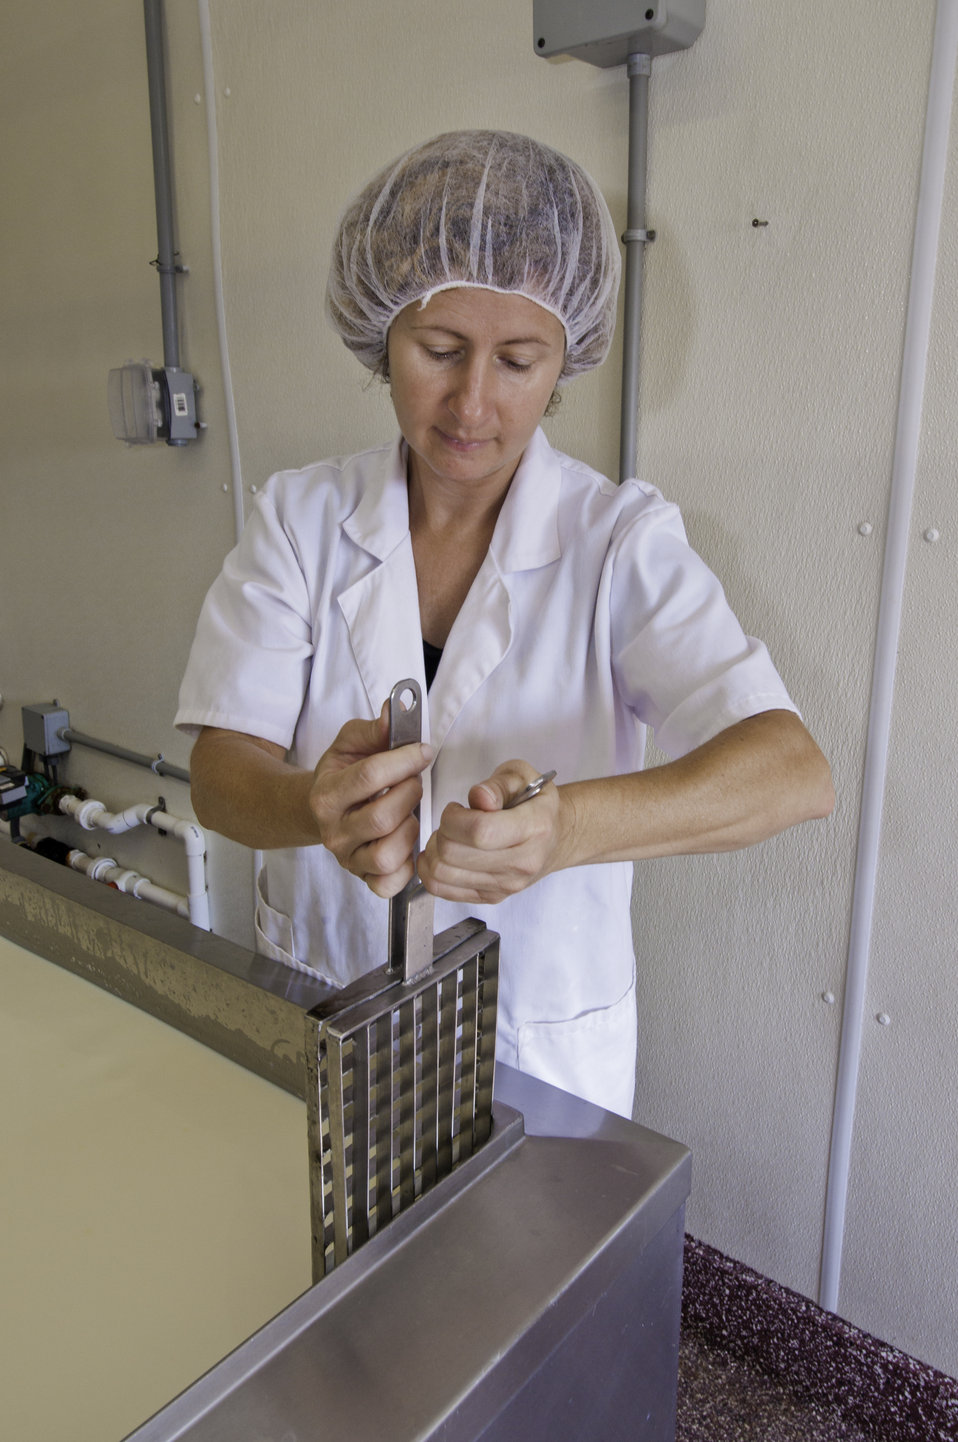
Chapel’s Country Creamery owner Holly Foster in Easton, MD sets the curd knives in 1150 pounds of milk that will be used to produce the milk curd used to produce the dairy’s “Bay Blue” cheese. The dairy uses fresh raw milk 12-24 hours old. The milk is all-natural and contains no synthetic hormones, antibiotics, or chemical compounds.